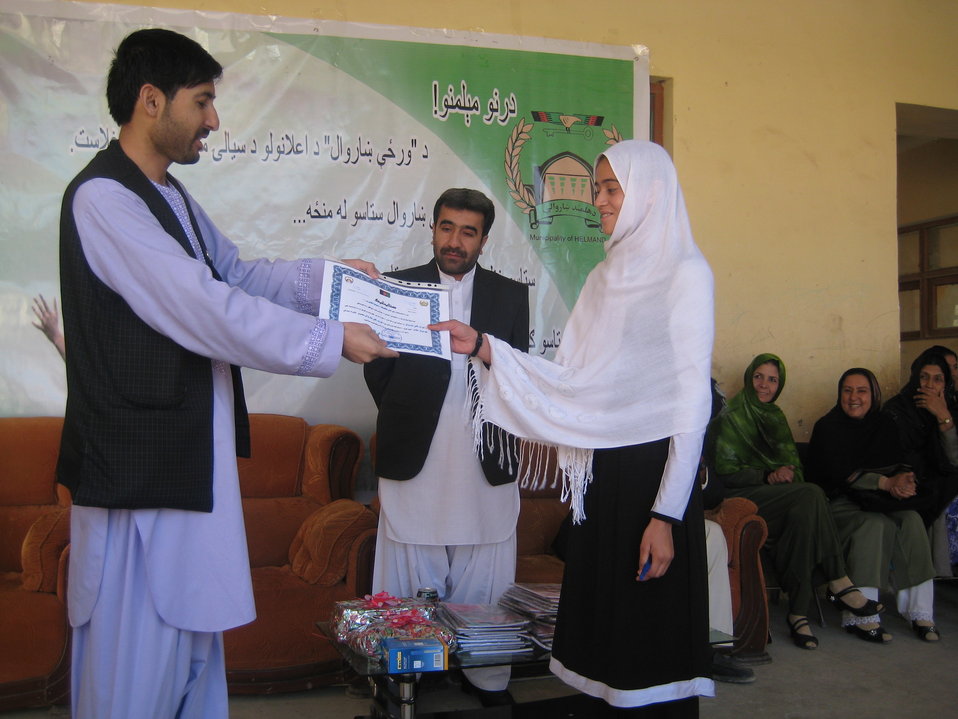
Young Mayors of Southern Afghanistan

Shafiqa Deputy Mayor of the Day in Helmand Province